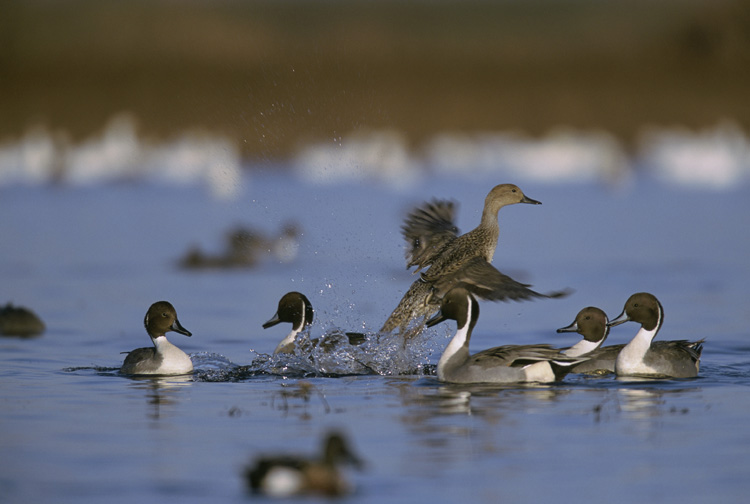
Northern Pintail Taking Off

Scanned by:
Retouched by: DT-RK
QC'd by: DT-SS